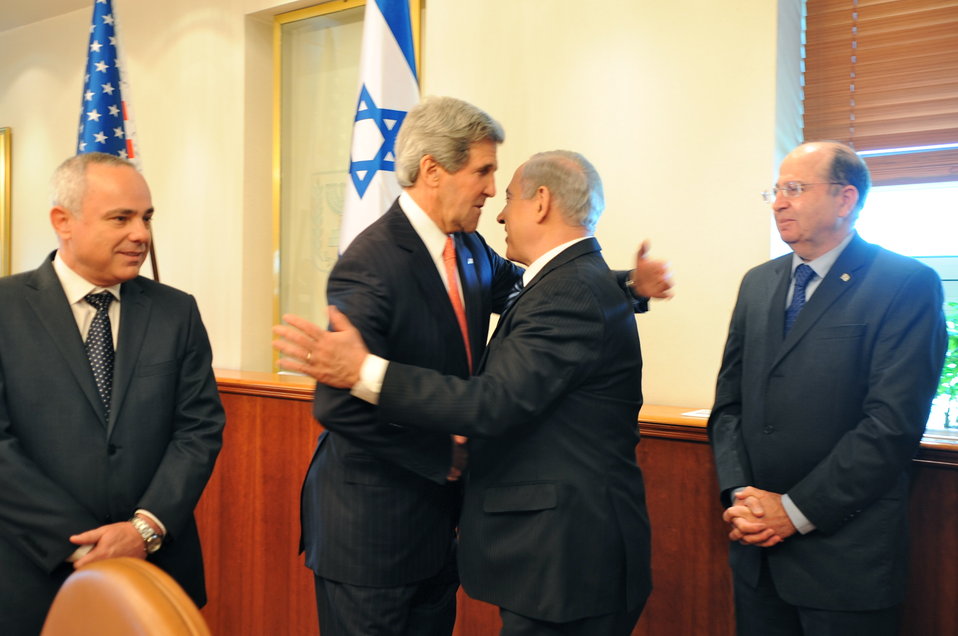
Secretary Kerry Is Greeted By Israeli Prime Minister Netanyahu

U.S. Secretary of State John Kerry is greeted by Israeli Prime Minister Benjamin Netanyahu prior to their meeting in Jerusalem on May 23, 2013.